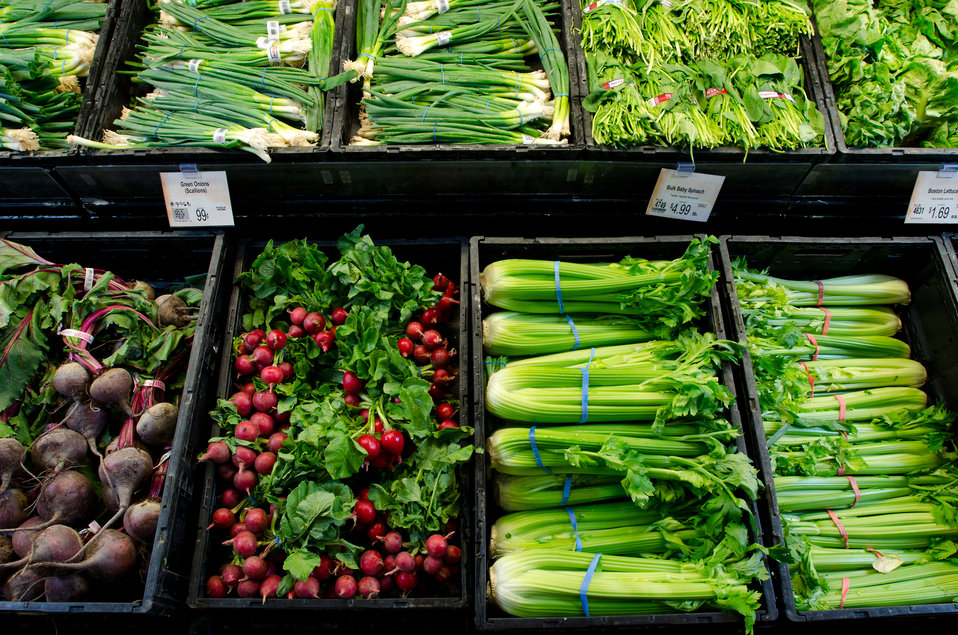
Leafy green produce at a grocery store in Fairfax, Virginia, on March 3, 2011.